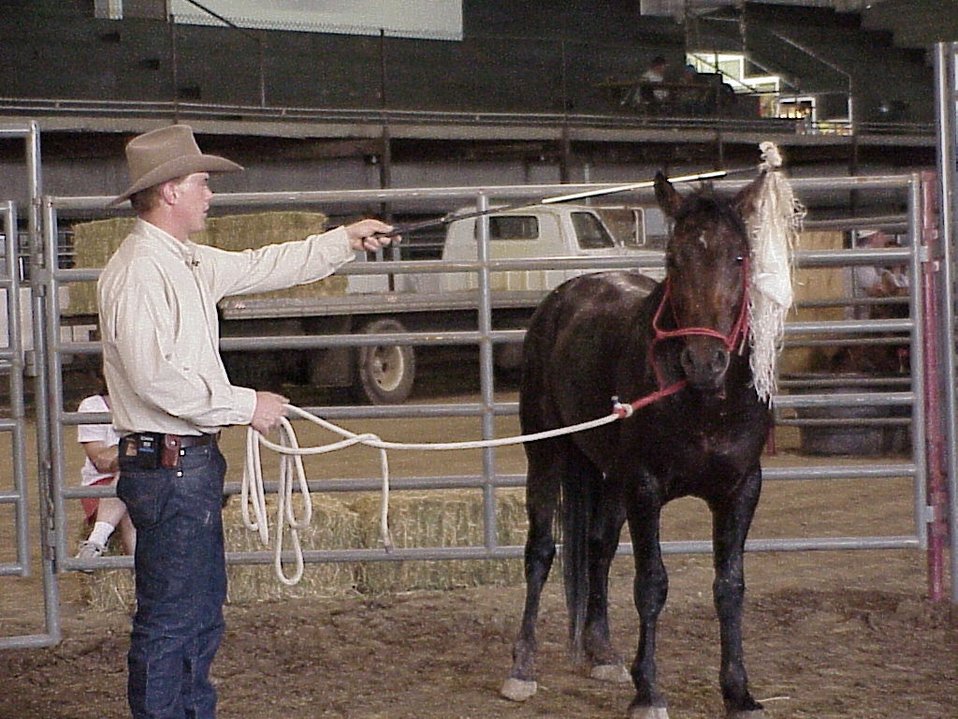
Horse Gentler Mario Johnson Lewiston Wild Horse and Burro Adoption Program Auction WHB indoor auction Cottonwood Field Office UCSC Upper Columbia Salmon Clearwater District